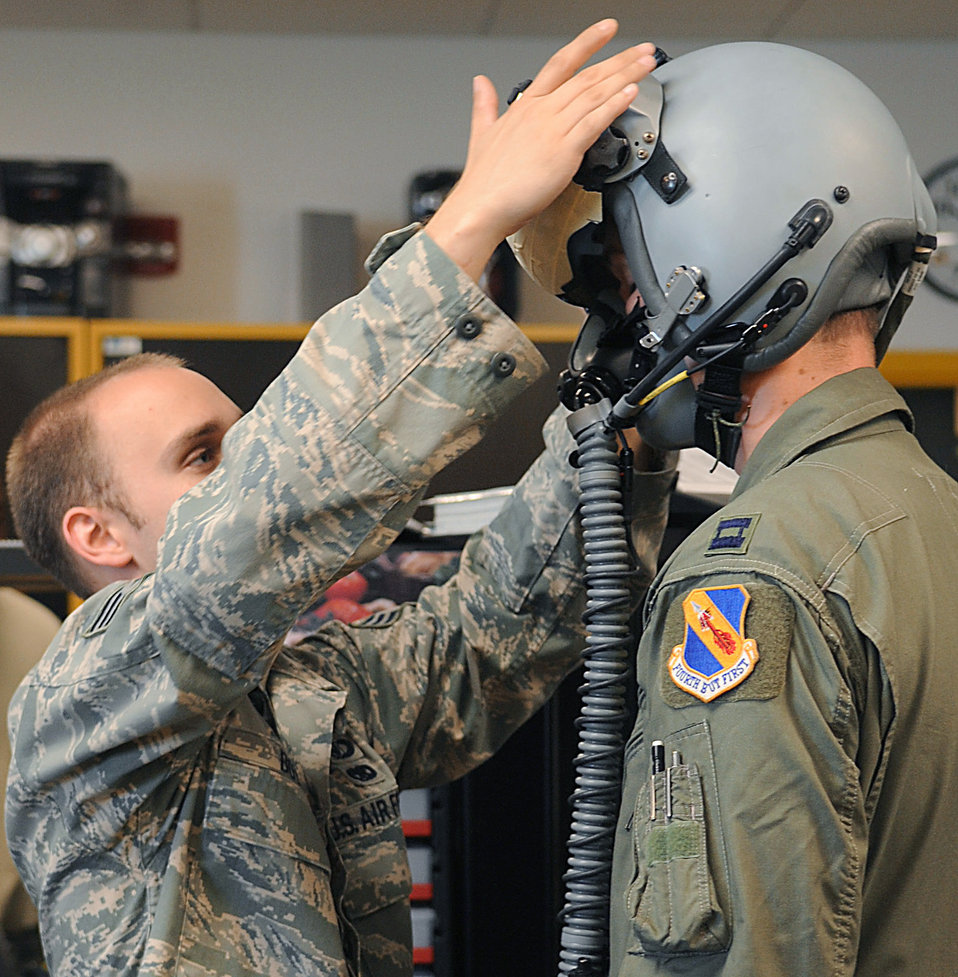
Airmen enhance F-15E capabilities with helmet-mounted cueing system

Senior Airman Kevin Boyne custom fits Capt. Dan Olthoff's Joint Helmet-Mounted Cueing System Aug. 9, 2010, at Seymour Johnson Air Force Base, N.C. The 4th Operations Support Squadron life support specialists fit each pilot with a JHMCS and visor guaranteeing a perfect fit and also making the helmet more comfortable and lightweight. Airman Boyne is a 4th Operations Support Squadron aircrew flight equipment craftsman. Captain Olthoff is a 336th Fighter Squadron F-15 E Strike Eagle pilot.